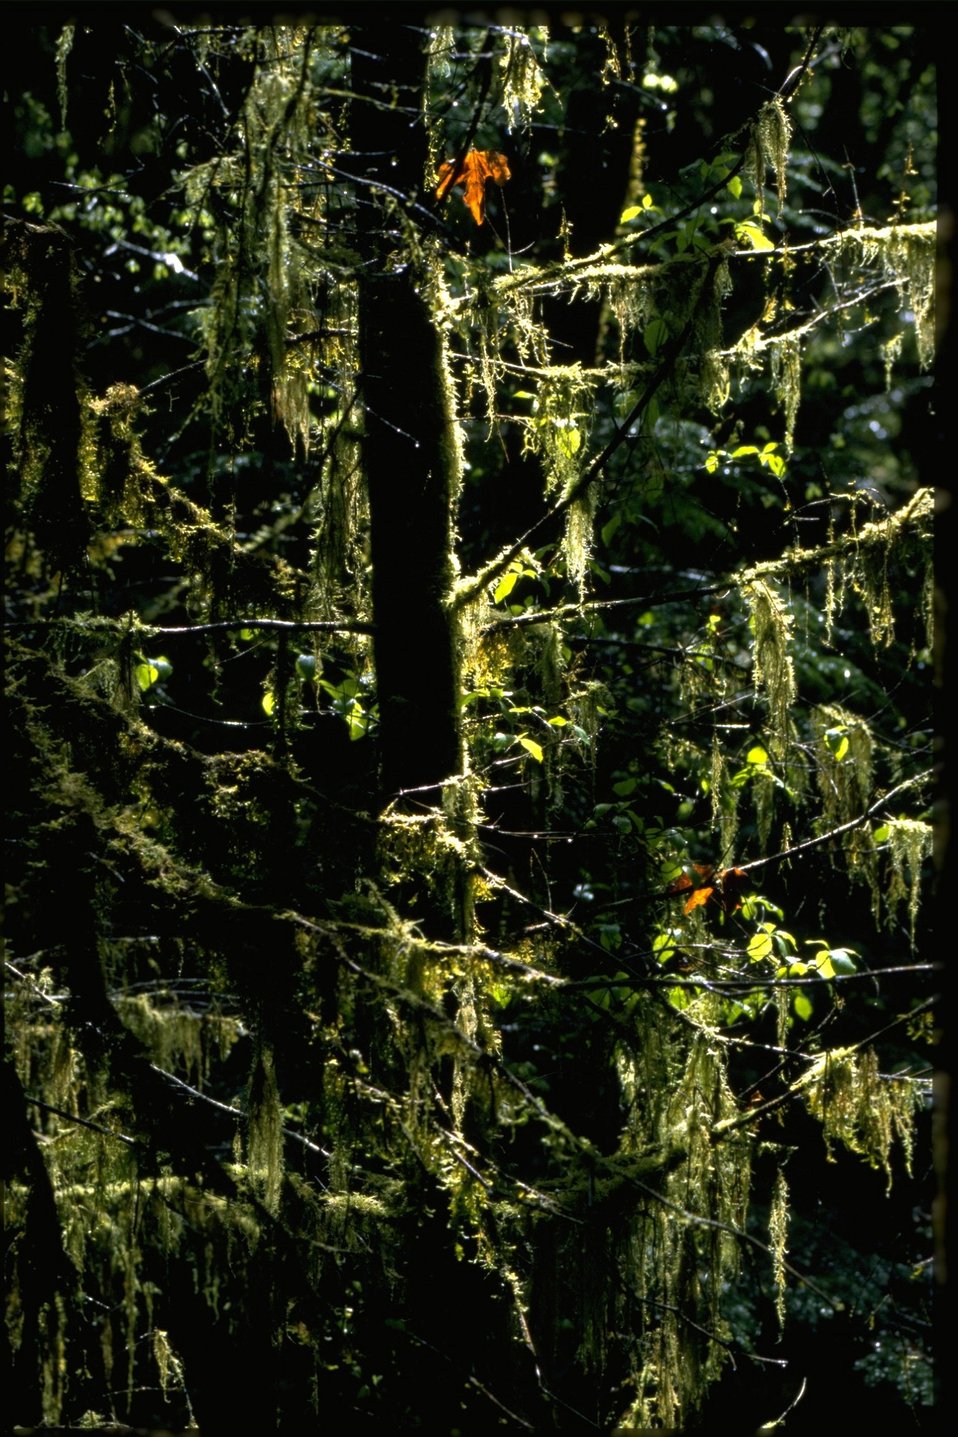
Fasshot of Bryophytic epiphytes.